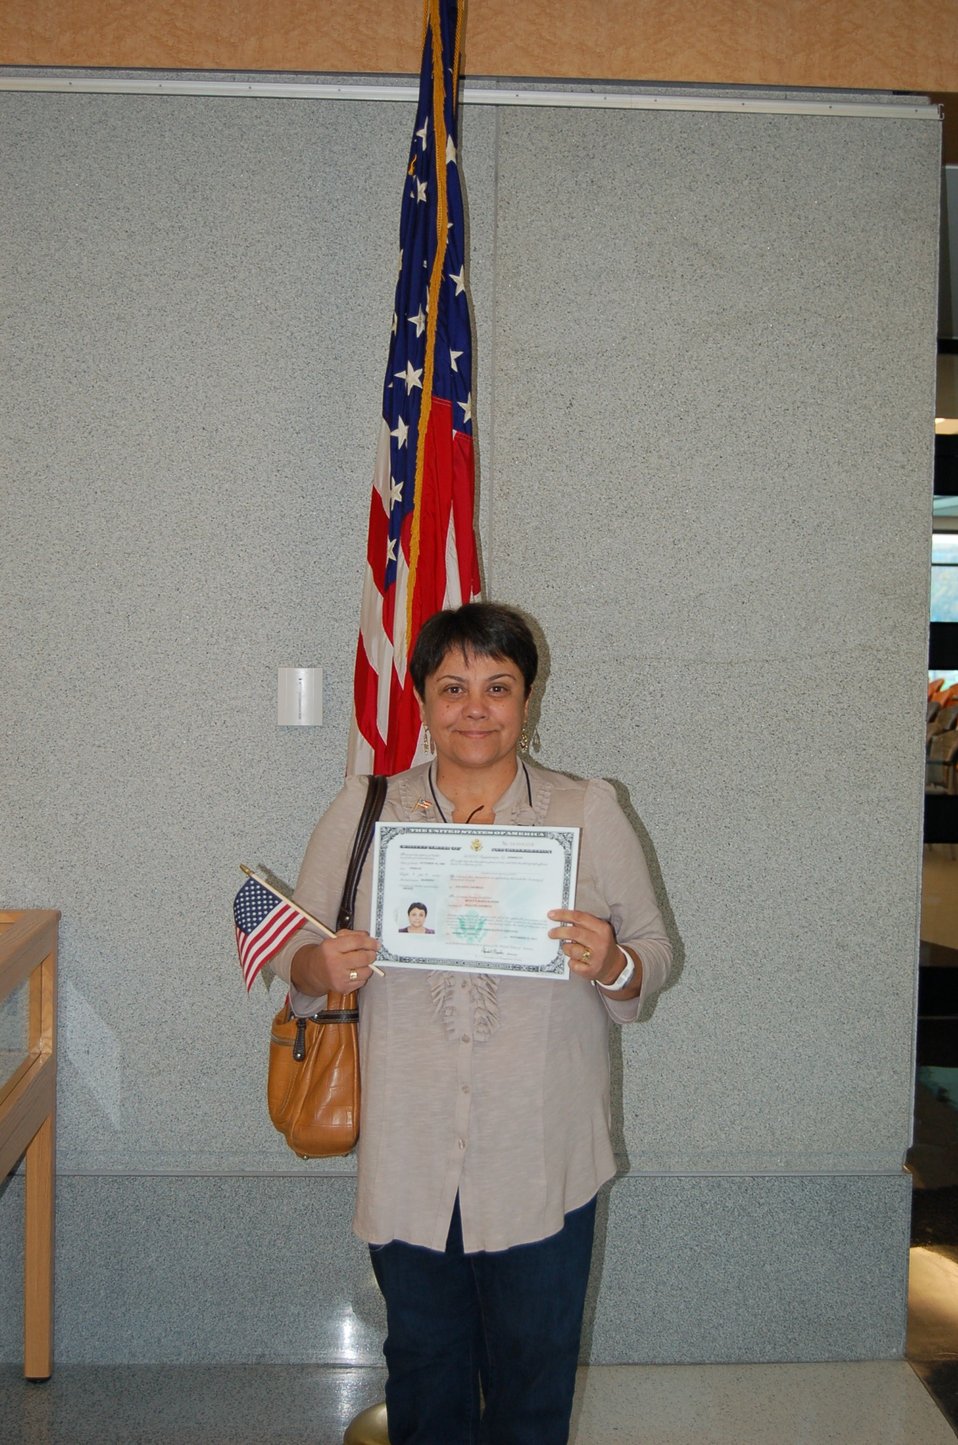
New Citizens